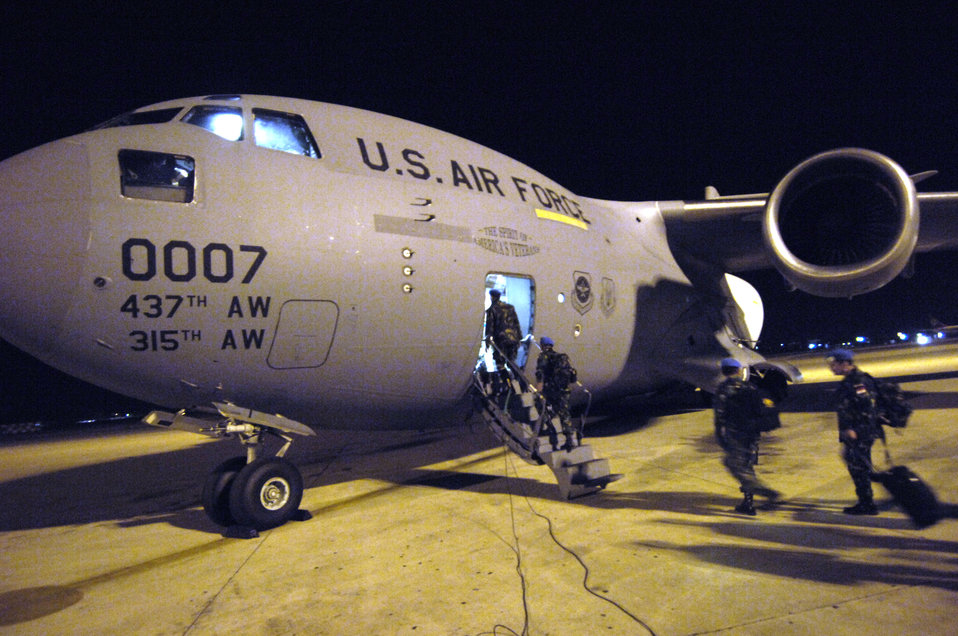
Moving the peacekeepers

Indonesian peacekeeping troops board a C-17 Globemaster III Nov. 8 for deployment to Lebanon in support of UNIFIL, the United Nation's Interim Force in Lebanon.